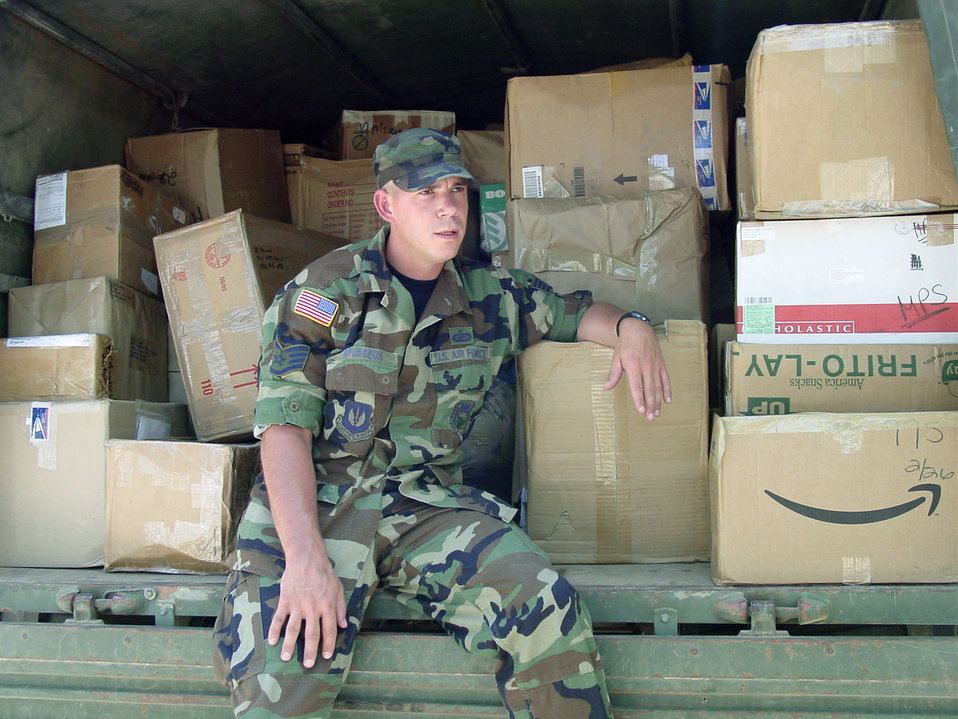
'American family' supports NATO, humanitarian effort

PRISTINA, Kosovo -- Staff Sgt. Bill Spurgeon takes a break after loading more than 80 boxes onto a truck for a 40-mile trip to a children's shelter here June 27. Sergeant Spurgeon is a disbursing noncommissioned officer at Kosovo Force headquarters and is deployed from Royal Air Force Lakenheath, England.